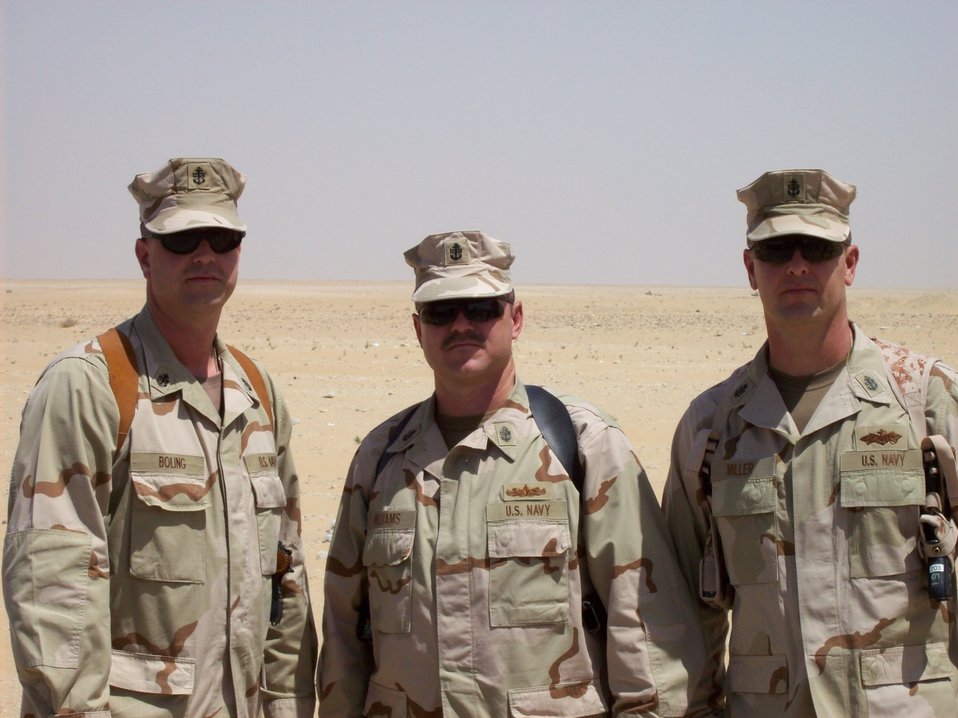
Greg Boling.
.
Senior Chief Greg Boling entered the U.S. Navy in May 1991, serving five years on active duty and is currently serving in the Navy Reserves with Operational Health Support Unit, Camp Lejeune. He serves as a Regional Senior Enlisted Leader over five medical detachments. Greg has 21 years naval service as a Hospital Corpsman, beginning his career at Recruit Training Command Orlando, FL. Upon graduation, he was stationed on the USS George Washington, CVN-73, at Naval Station Great Lakes, Camp Lejeune, and Camp Geiger, NC. Greg was recalled to active duty in 2003 to the Walter Reed National Military Medical Center Bethesda and deployed in 2008 to Kuwait with Navy Expeditionary Logistics Support Group..
.
Greg’s military awards include the Army Commendation Medal, 4 Navy and Marine Corps Achievement Medals, and the Navy Reserve Meritorious Service Medal along with other unit and personal awards..
.
Greg has worked as a Wildlife Technician at Carolina Sandhills National Wildlife Refuge in McBee, SC since 2001.